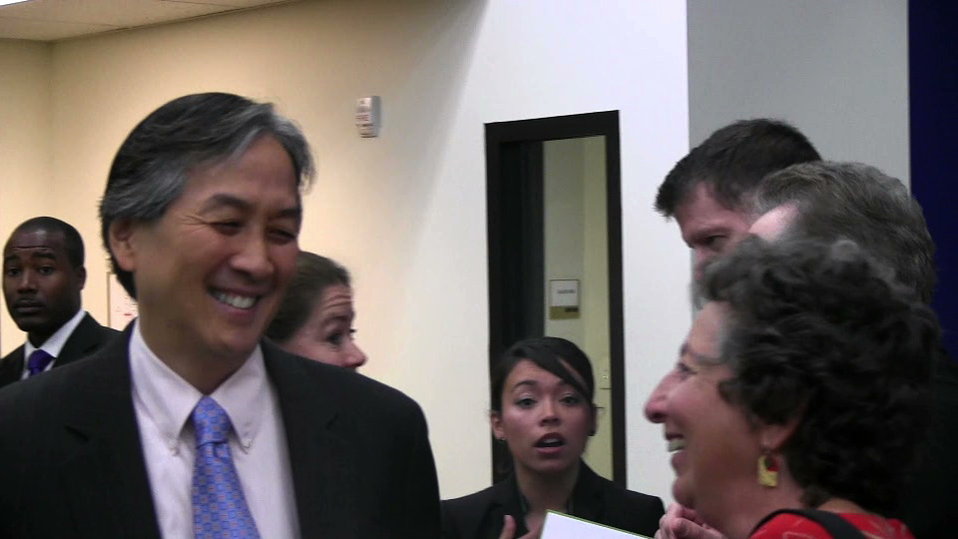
Koh1